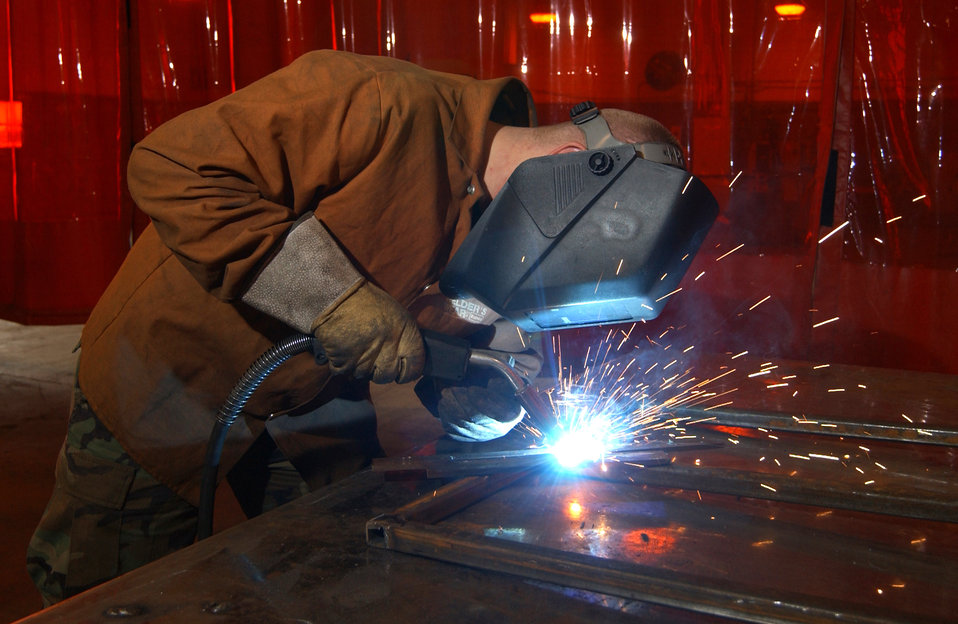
Spark of light

BARKSDALE AIR FORCE BASE, La. -- Airman 1st Class Daniel Knapp repairs a maintenance bench here Nov. 9. Airman Knapp is assigned to the 2nd Maintenance Squadron.